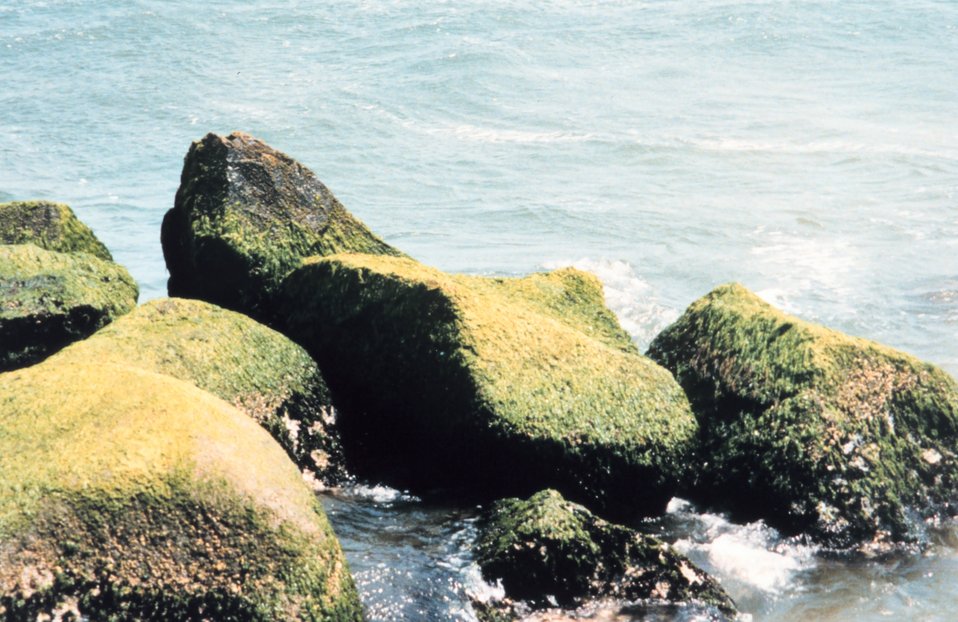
Moss covered boulders on a New England shoreline